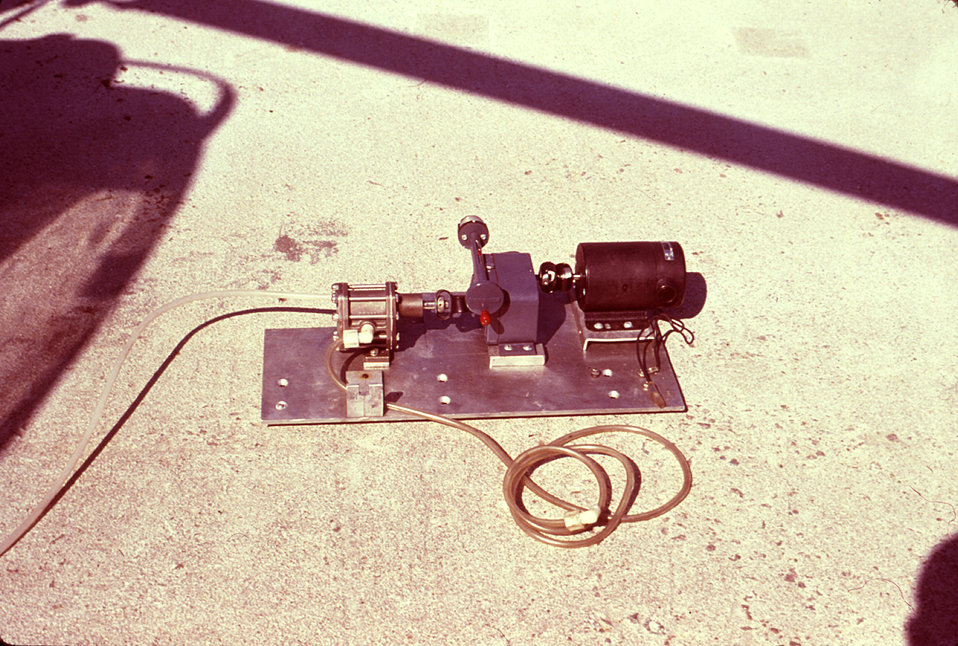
This photograph depicts the spray drive unit, which powered an insecticidal fog generator's dispersal mechanism attached to a Hughes helicopter that had been outfitted with just such an ultra-low volume (ULV) insecticidal fog generator enabling it to be used to control populations of insect disease vectors.